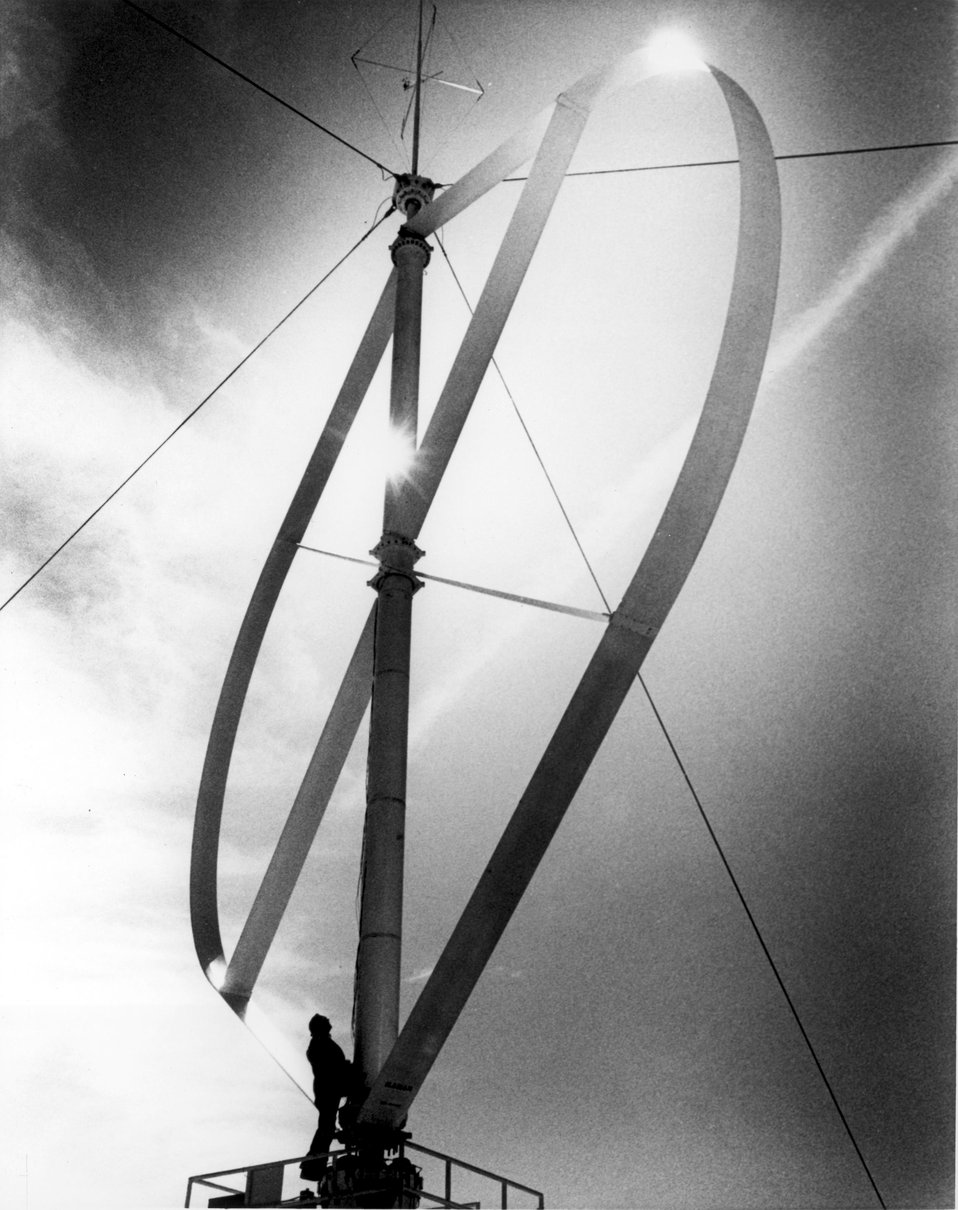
The new 55-foot-diameter vertical axis wind turbine now undergoing initial testing at Sandia Laboratories in Albuquerque, as part of the U.S. Department of Energy's wind energy program. c. 1977